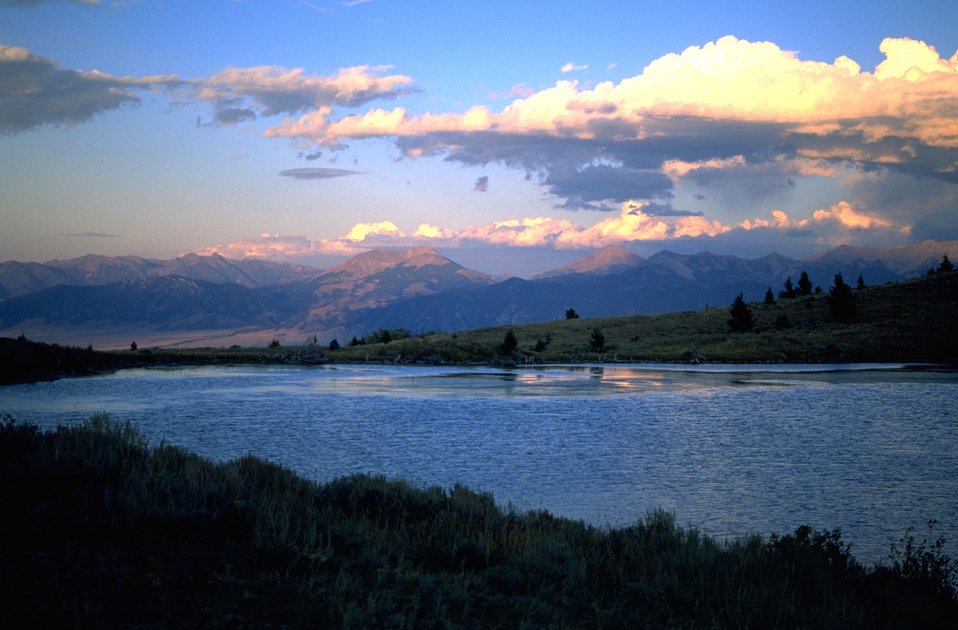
Colorful view of the lake in the evening sun with reflection of the clouds